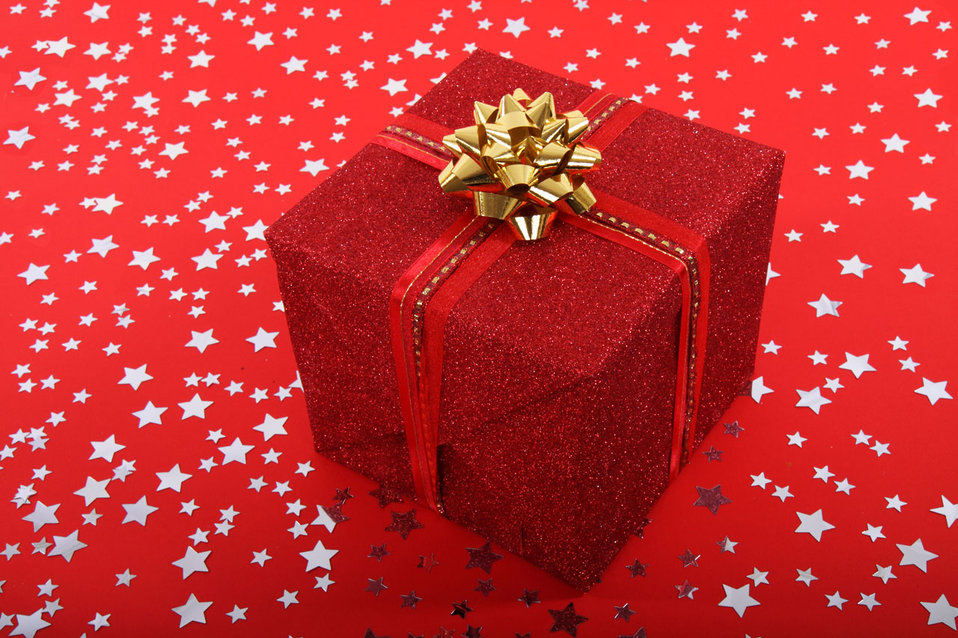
Christmas gift

Red christmas gift on red starry background.